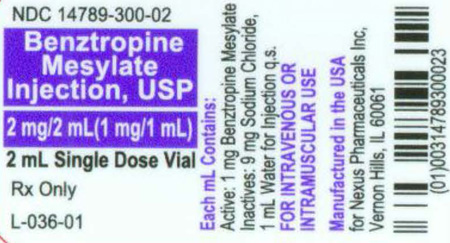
RECALLED – Benztropine Mesylate Injection

June 30, 2013 – Product Recall – Fresenius Kabi USA Issues Voluntary Nationwide Recall of Benztropine Mesylate Injection, USP 2 mg/2 mL (1 mg/mL), in 2 mL Single Dose Vials.